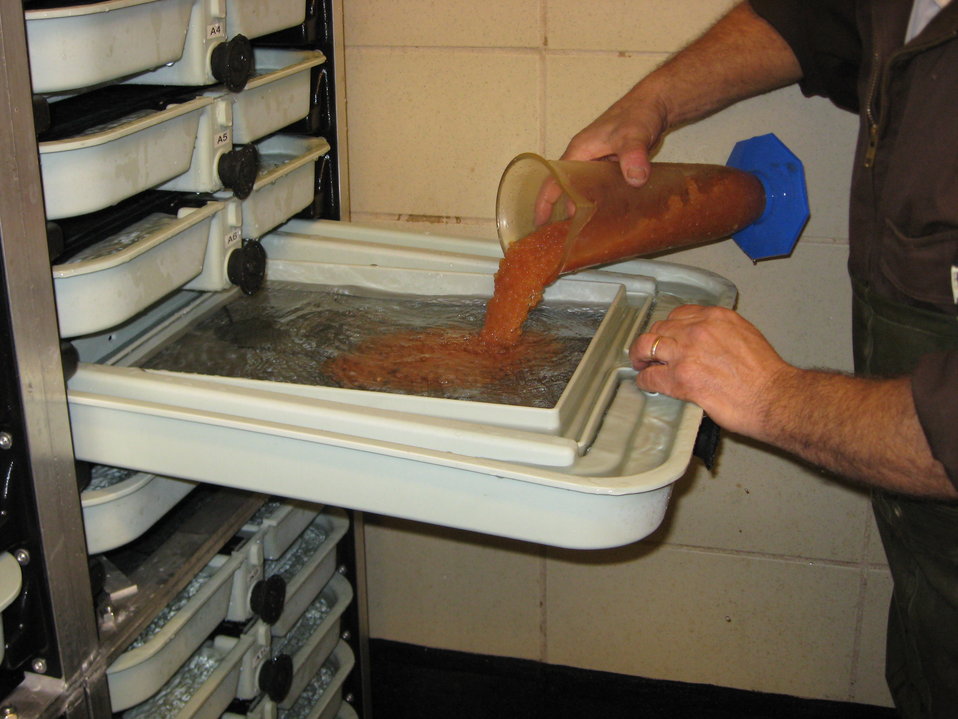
Fishery biologist with lake trout eggs

In December, the hatchery received at total of one million lake trout eggs from the State of Vermont’s Salisbury Fish Hatchery and the Sullivan Creek National Fish Hatchery in Michigan.